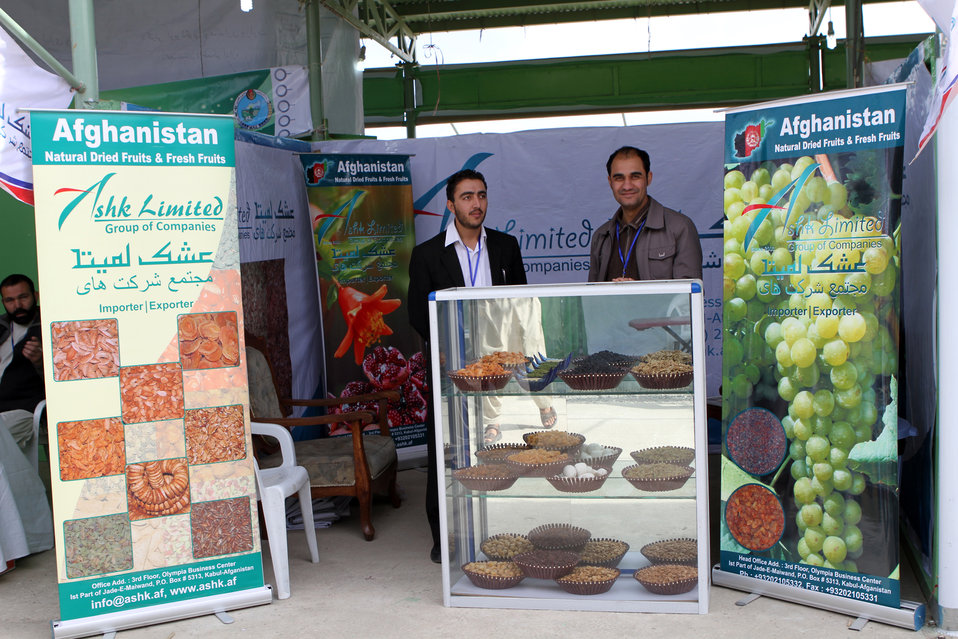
Agfair event